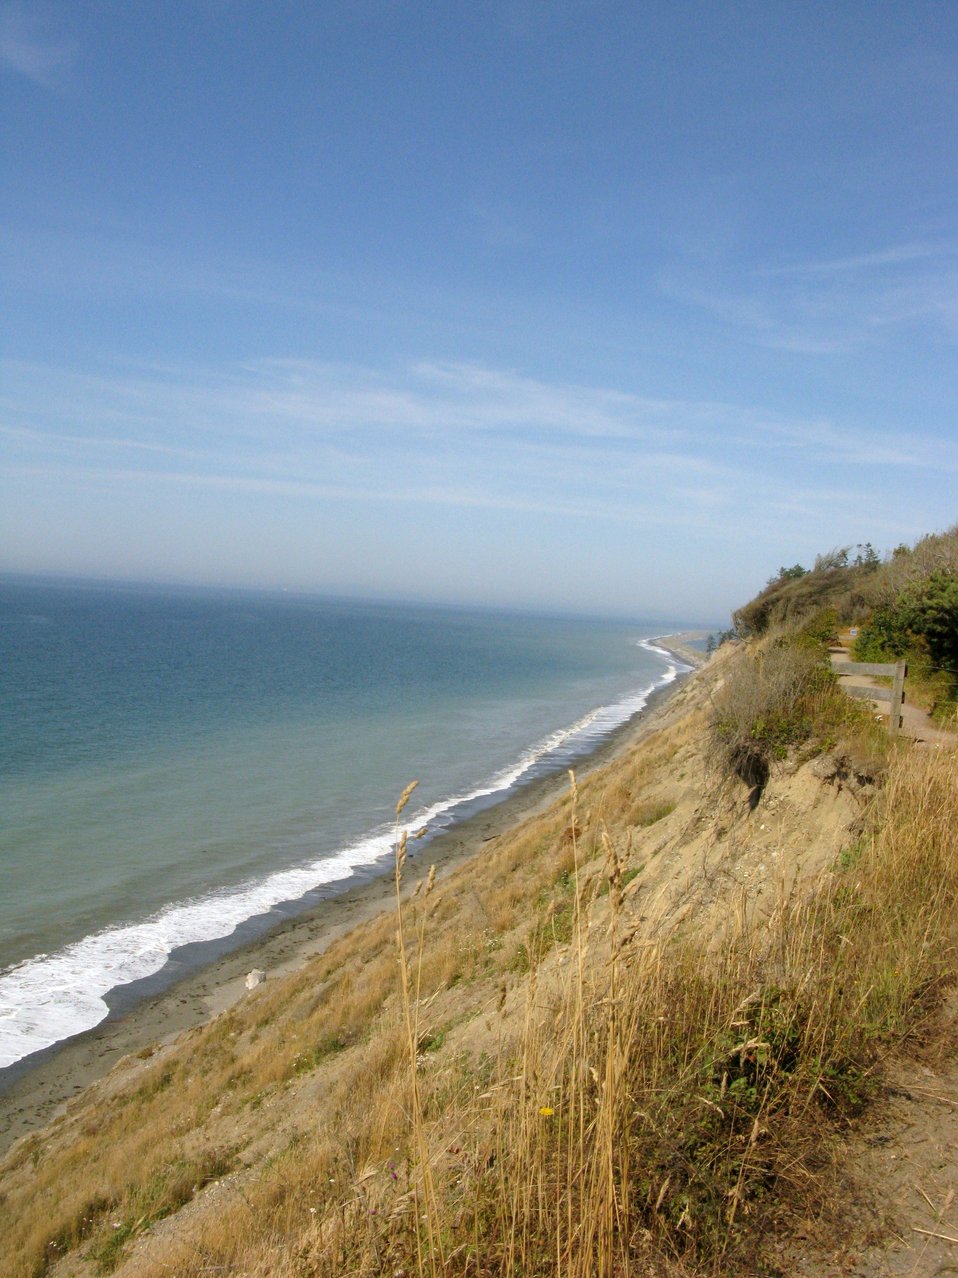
Dungeness Refuge

Dungeness National Wildlife Refuge, Washington.